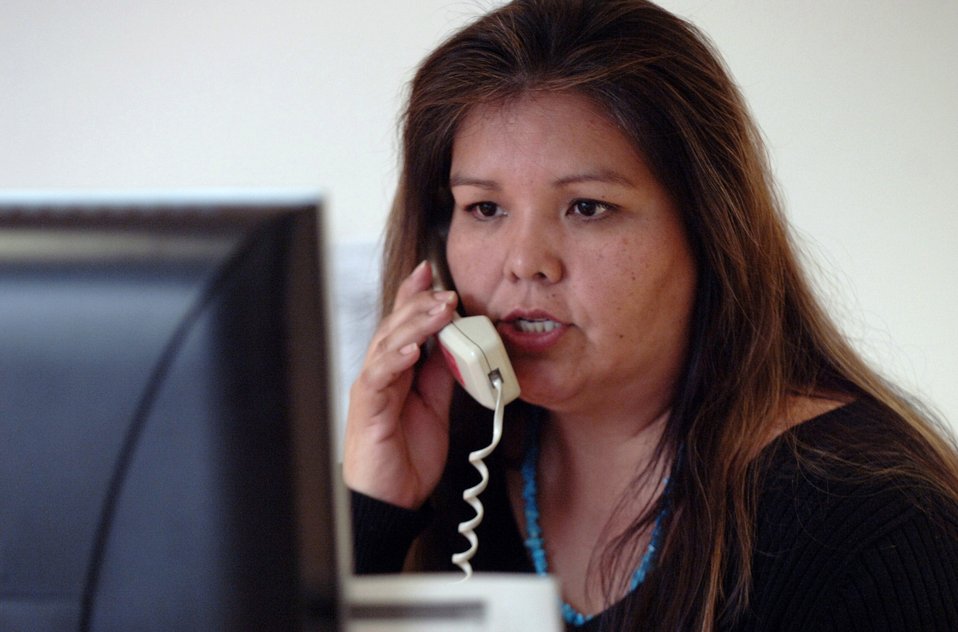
Balancing traditional, mainstream cultures as part of the Navajo Nation

Glenda Shirley-Yellowhorse is a human resource advisor assigned to the 435th Mission Support Squadron at Ramstein Air Base, Germany. She is also an enrolled member of the Navajo Nation from the